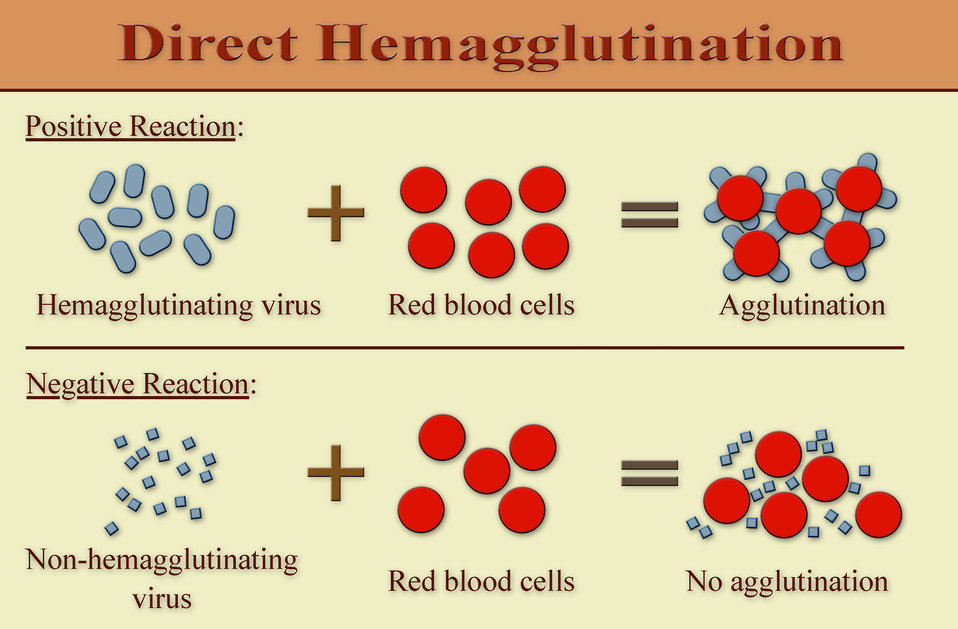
At the component level, this diagram illustrates two different direct hemagglutination reactions, a positive viral hemagglutination assay reaction (above), and a negative viral hemagglutination assay (HA) reaction (below). The former involves a hemagglutinating virus, while the latter involves the implementation of a non-hemagglutinating virus, and how each interacts 'directly' with red blood cells.